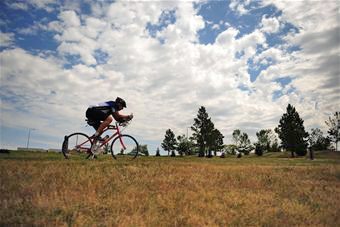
Sergeant rides to cure

Tech. Sgt. Kory Lindsey rides his bicycle Aug. 16, 2010, at Ellsworth AFB, S.D. Sergeant Lindsey is an air traffic control journeyman with the 28th Operations Support Squadron there. He will participate in a ride to raise money for a cure for multiple sclerosis and his goal is to better the life of a close family member and others who are affected by the disease.